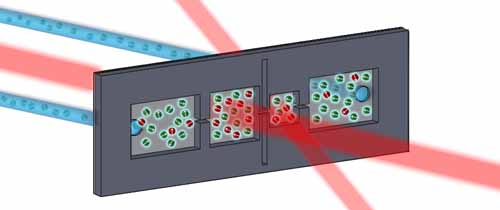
NIST chip that makes polarized xenon gas

Illustration of NIST chip that makes polarized xenon gas. Xenon atoms (green) are loaded into the chamber on the left. The xenon flows into the next chamber, where the atoms are polarized through collisions with rubidium atoms (red) that are illuminated with circularly polarized light. Then the xenon flows into the smaller chamber, where its polarization is measured, using the rubidium atoms in the same chamber as magnetometers. Atoms exit the chip from the chamber on the far right.